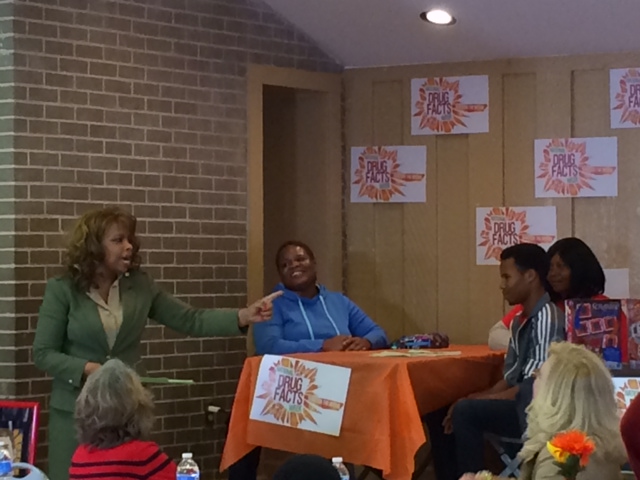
Shattering the Myths About Drugs

Folks from Orlando, Florida are 'Shattering the Myths' during the 2014 National Drug Facts Week at Orlo Vista Park.